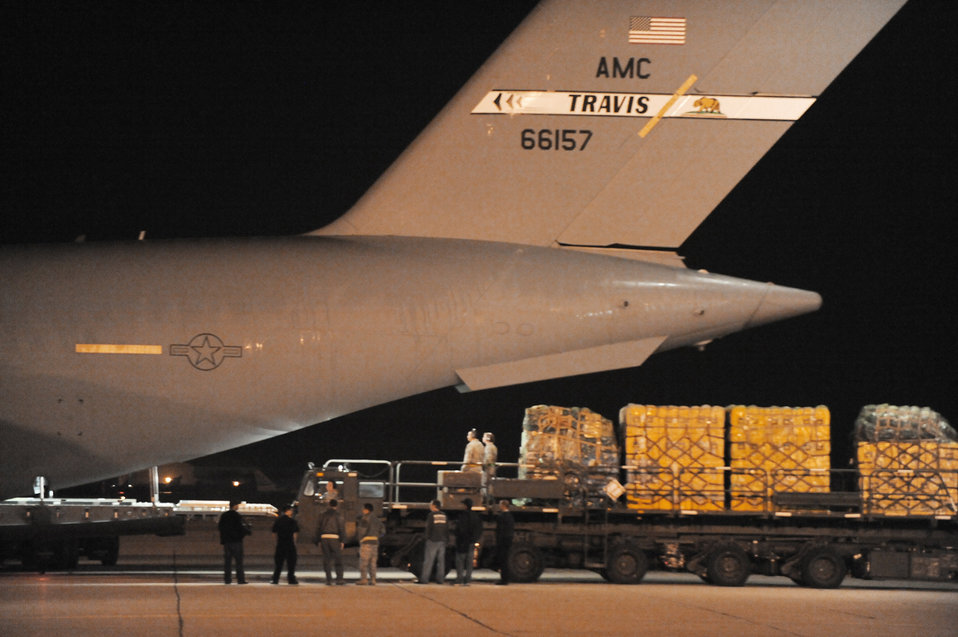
Airmen load C-17s for Haitian relief

Relief workers and search and rescue teams use March Air Reserve Base, Calif., as a staging area to assemble supplies, people and equipment Jan. 13, 2010, following the recent 7.0-magnitude earthquake in Haiti. All will be loaded on a C-17 Globemaster III and flown into Port-au-Prince, Haiti. The aircraft is assigned to the 60th Air Wing at Travis Air Force Base, Calif.,